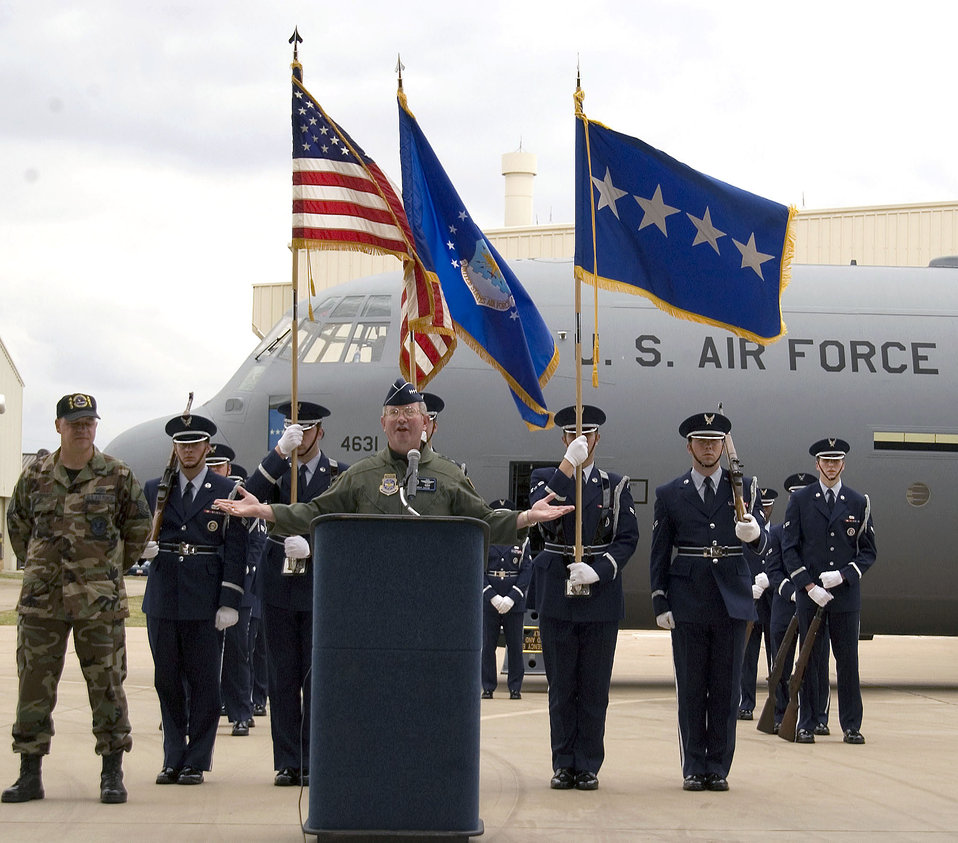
AMC, 463rd Airlift Group welcome first C-130J

General Duncan McNabb, Air Mobility Command commander, highlights the capabilities of the C-130J Hercules March 13 after personally delivering a new C-130J to the 463rd Airlift Group at Little Rock Air Force Base, Ark. It is the unit's first J-model and will be used in combat operations around the world.